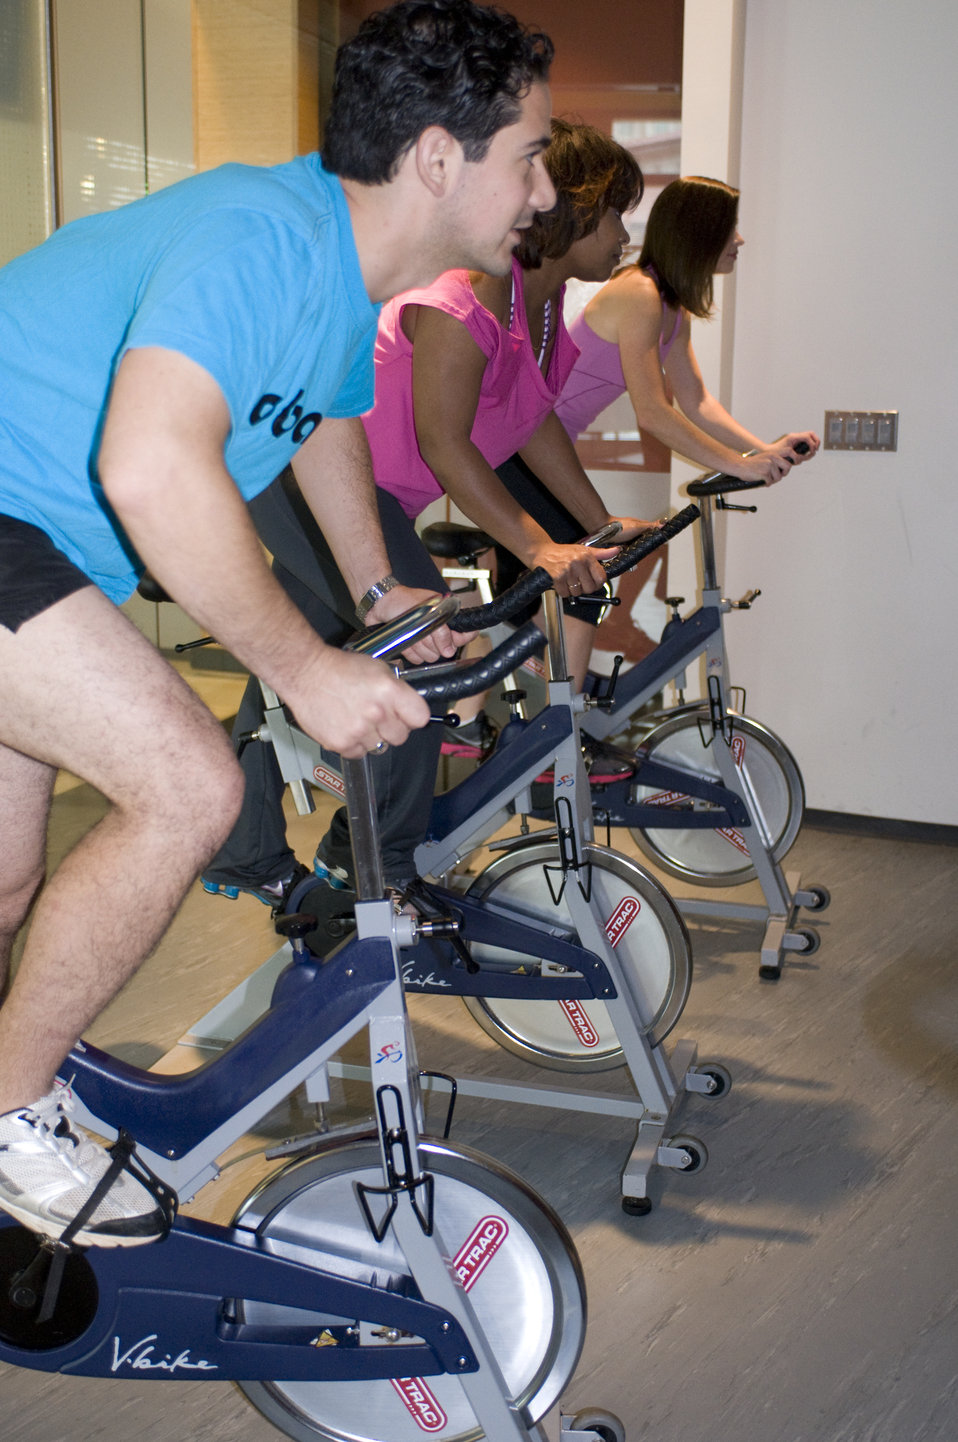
This image depicts a class in session, the purpose of which was to instruct a number of Centers for Disease Control (CDC) employees through an aerobic spinning session, consisting of attendees following the participatory commands of an instructor on whom they were focus to the right, though unseen here in this photograph.